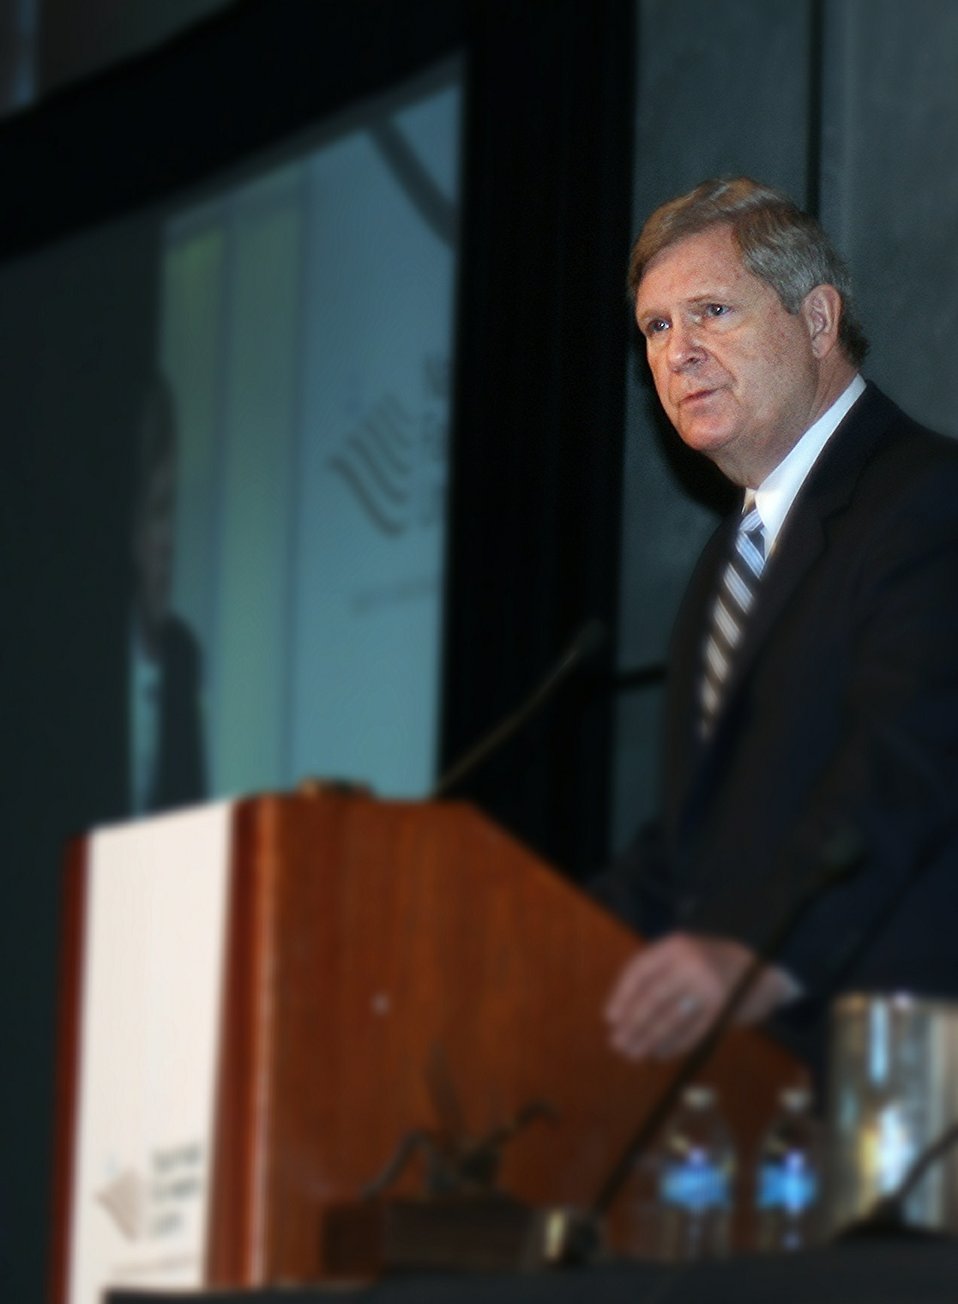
Agriculture Secretary Tom Vilsack visits the National Farmers Union Conference in Santa Fe, NM on Monday, Mar. 10, 2014.